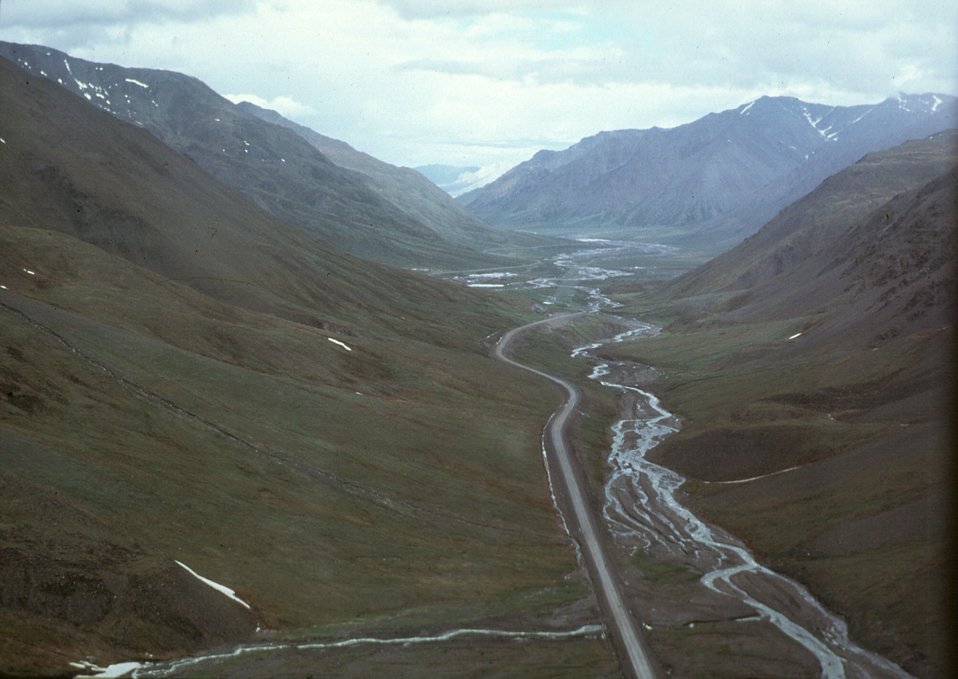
Brooks Range at Atigun Pass, view north